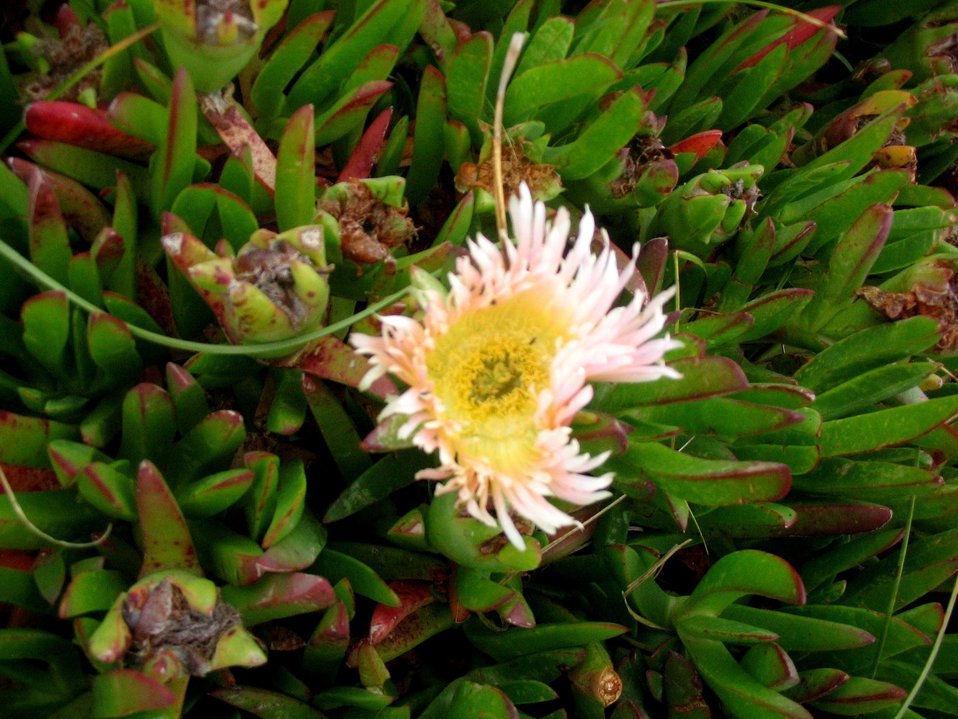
Yellow iceplant flower (Carpobrotus edulis)